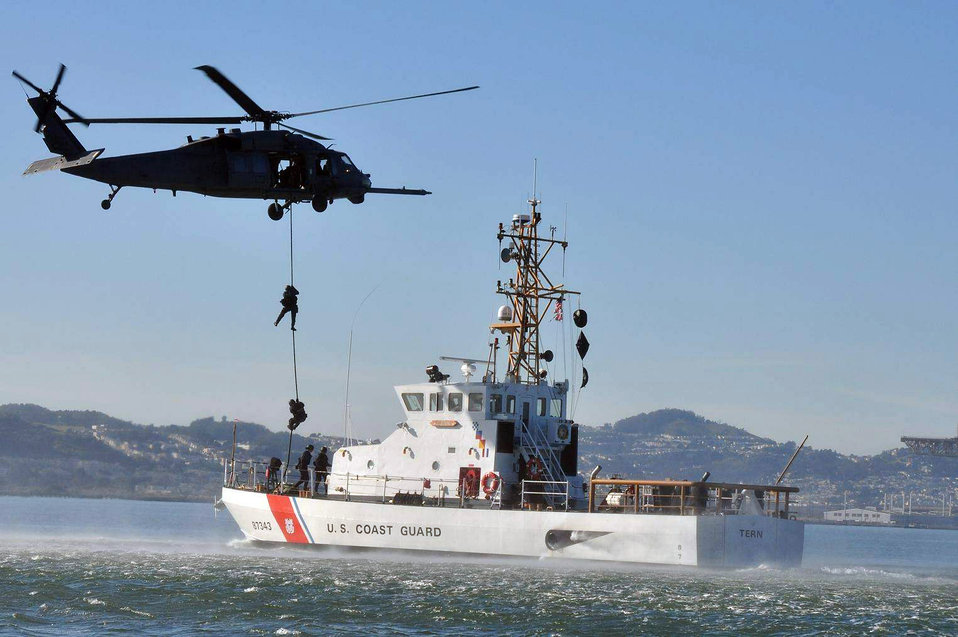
Airmen coordinate joint lifesaving mission off California coast

This file photo shows Airmen from the 129th Rescue Wing performing during a joint training mission in January 2009. The 129th Rescue Wing, based at Moffett Federal Airfield near San Francisco, helped rescue an injured passenger aboard a deep sea fishing vessel 1,400 miles off the coast of California March 31, 2010.